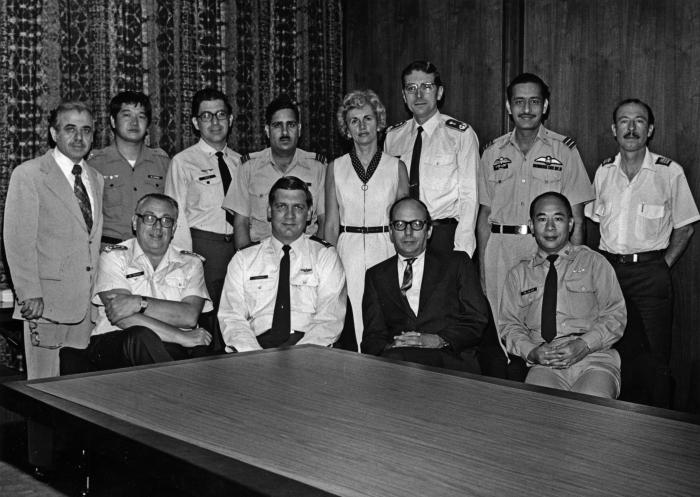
This photograph was taken at Brooks Air Force Base near San Antonio, Texas. The occasion was a meeting of aerospace physicians on May 14, 1976, and was located at the site of the present-day (July 2005) USAF School of Aerospace Medicine.